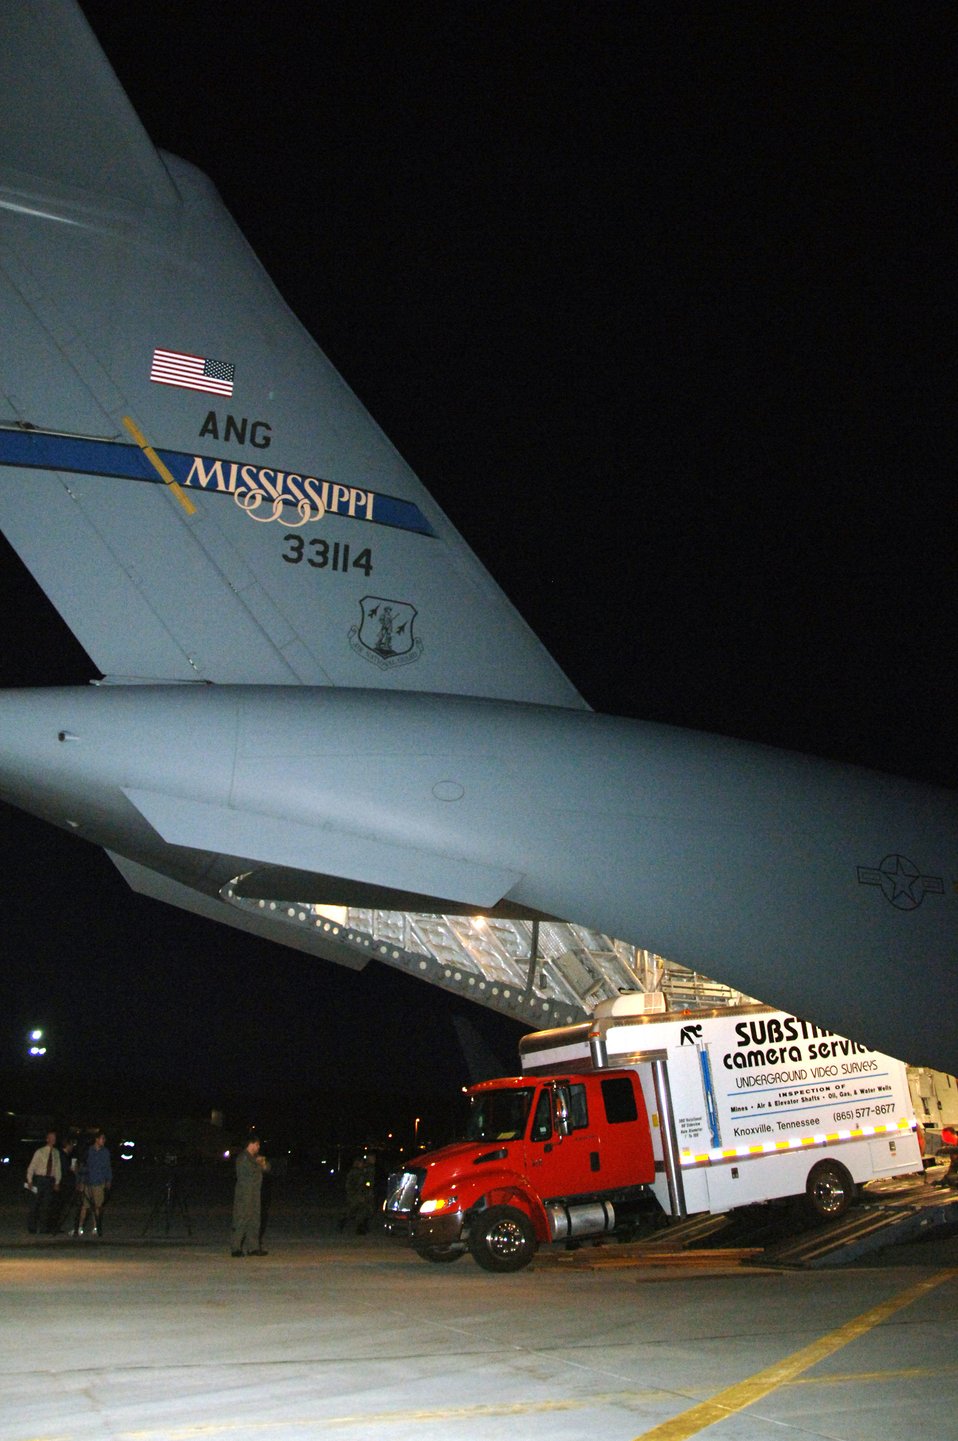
Air National Guard assists with Utah mining rescue

Airmen from the 151st Air Refueling Wing in Salt Lake City assist in the arrival of a C-17 Globemaster III from the Mississippi Air National Guard's 172nd Airlift Wing Aug. 9. The C-17 transported equipment used by Substrata Camera Services of Knoxville, Tenn., from its location in Topeka, Kan., to assist in rescue operations for six stranded Utah miners. The equipment will allow rescuers the ability to position a camera in the mine and assess the situation from a 360-degree angle. It will allow rescue crews to have a better idea of conditions inside the collasped mine.